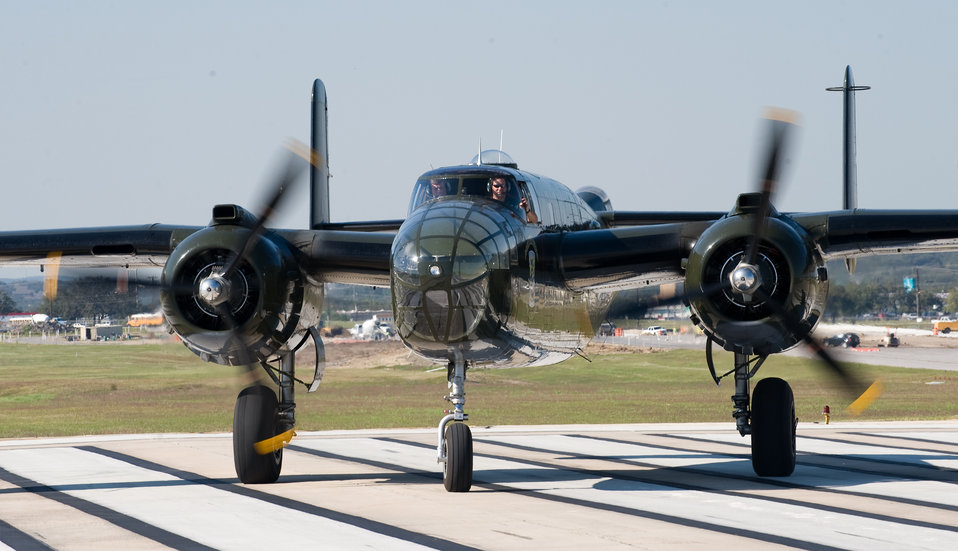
Warrior Flight